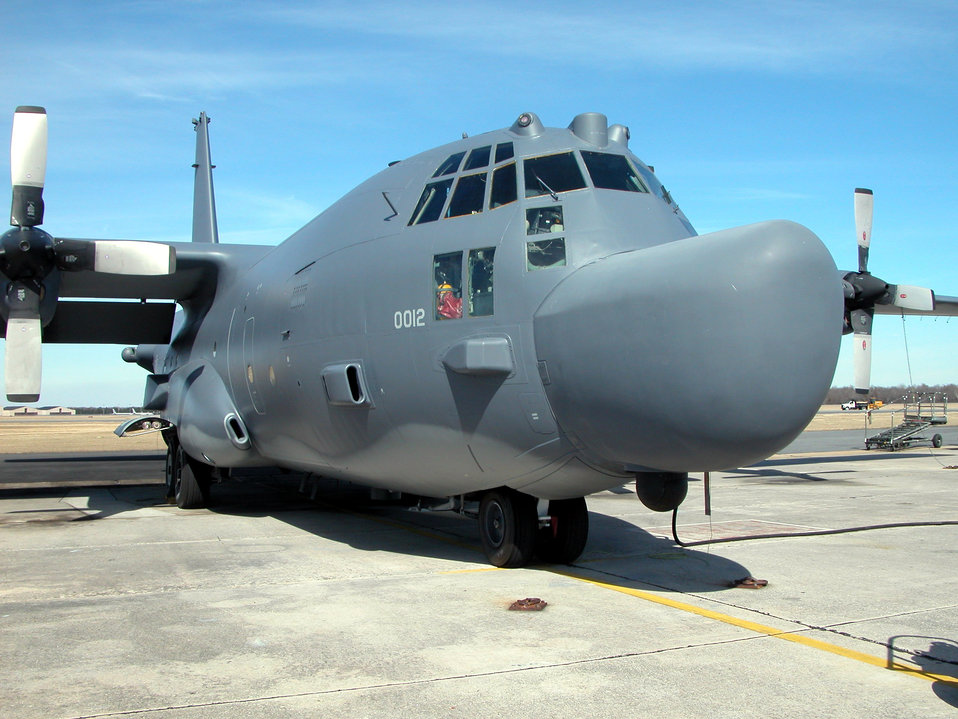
Robins C-130 team reaching accelerated goals

ROBINS AIR FORCE BASE, Ga. -- The C-130 production branch at Robins Air Force Base, Ga., was asked by Air Force Special Operations Command officials to accelerate work on four aircraft and get them back to the warfighter. The four aircraft include one AC-130H gunship and three MC-130 Combat Talon IIs.